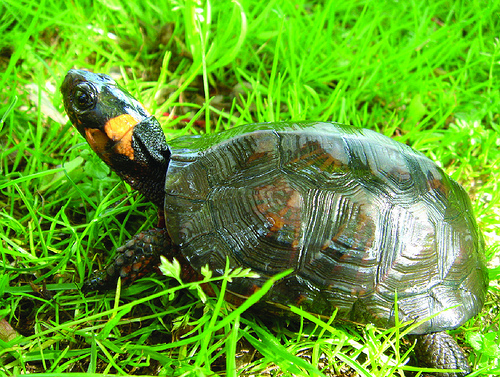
Bog turtle.